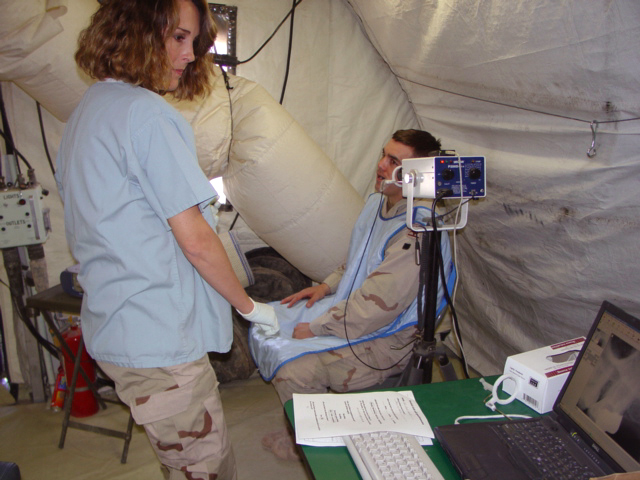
OIF

TALLIL AIR BASE, Iraq (AFPN) -- Staff Sgt. Candy Ables (left) uses hi-tech digital X-ray equipment to create an image of Army Sgt. Chad Hyatt's teeth on a laptop computer. Sergeant Ables is a dental technician deployed here from Lackland Air Force Base, Texas.